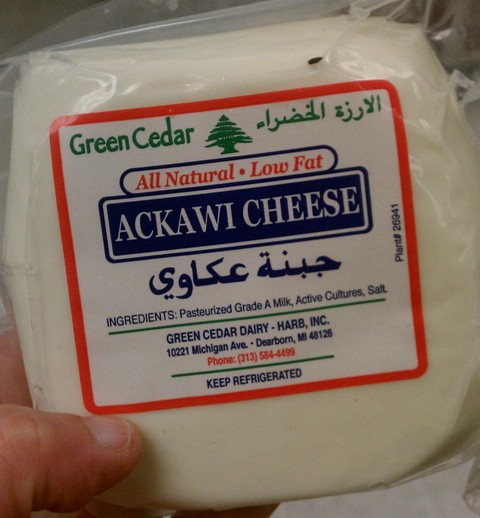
RECALLED - Cheese

December 27, 2011 - Product Recall - Green Cedar Dairy Announces the Recall of All Natural Ackawi Cheese and All Natural Chives Cheese with a sell by date up to July 1, 2012 due to Possible Listeria Contamination.